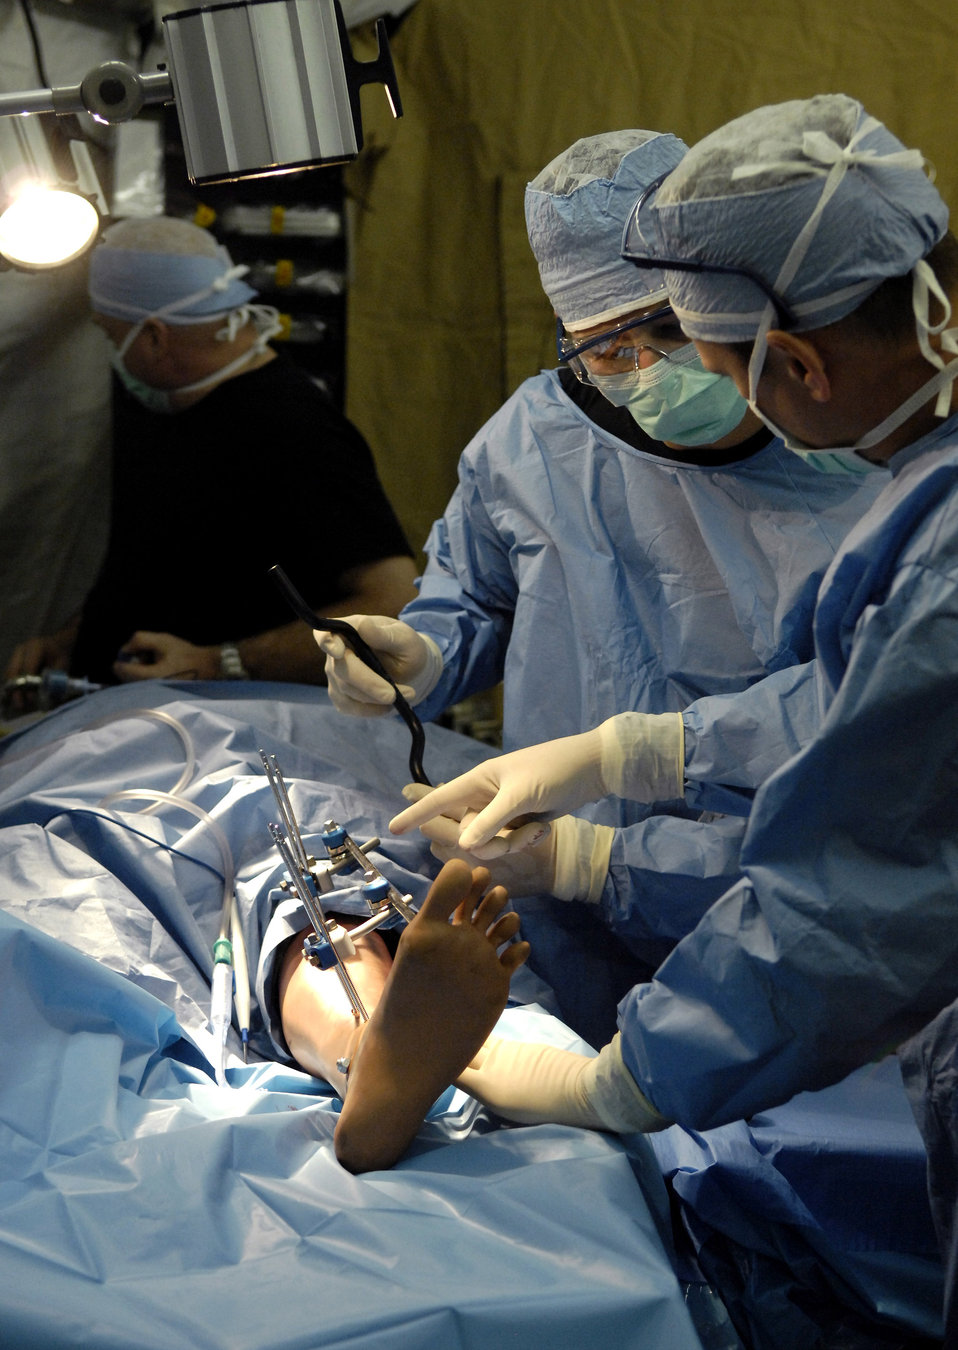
Providing a lifeline

Lt. Col. Greg Schumacher explains how to apply an external fixator on a patient to Senior Airman Wallace Cleveland during Exercise Pacific Lifeline Feb. 5 at Kona International Airport, Hawaii. Colonel Schumacher, a staff orthopedic surgeon, and Airman Cleveland, a surgical technician, are from the 3rd Medical Group from Elmendorf Air Force Base, Alaska. Pacific Lifeline is a total force exercise staging from three locations within the Hawaiian Islands. It provides approximately 900 Department of Defense members a test environment to rapidly deploy and provide time-critical services in the wake of a simulated natural disaster.